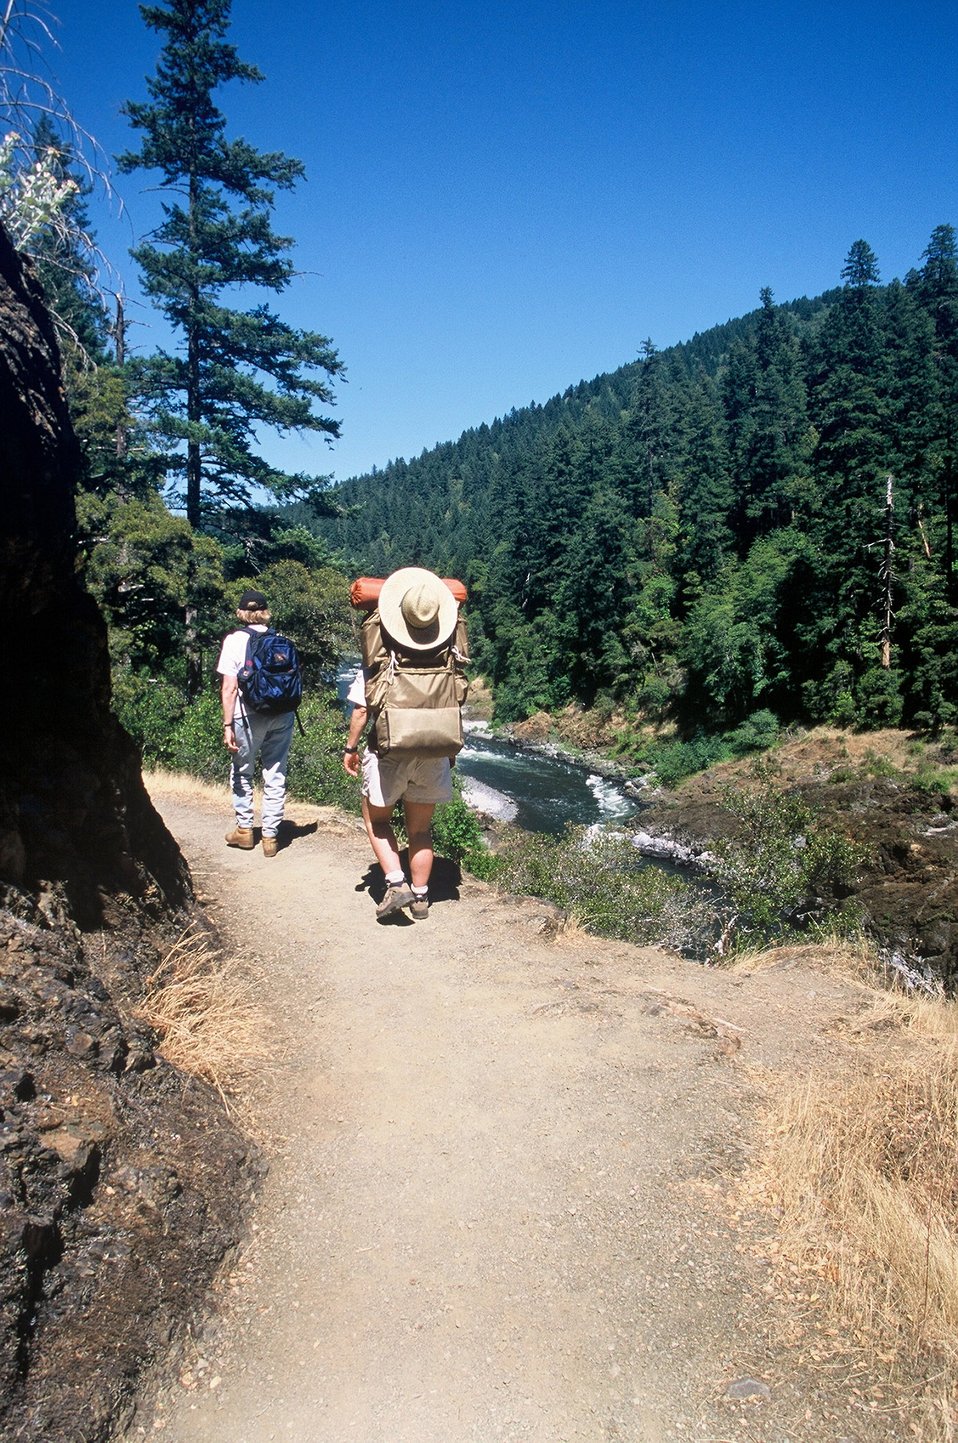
Hikers on trail between Mule Creek and Blossom. Looking up river.